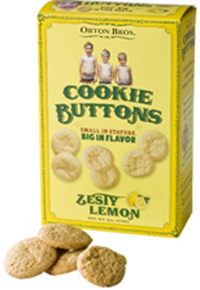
RECALLED – Cookies

March 26, 2014 – Product Recall – Vermont Common Foods Issues Allergy Alert on Undeclared Peanuts.